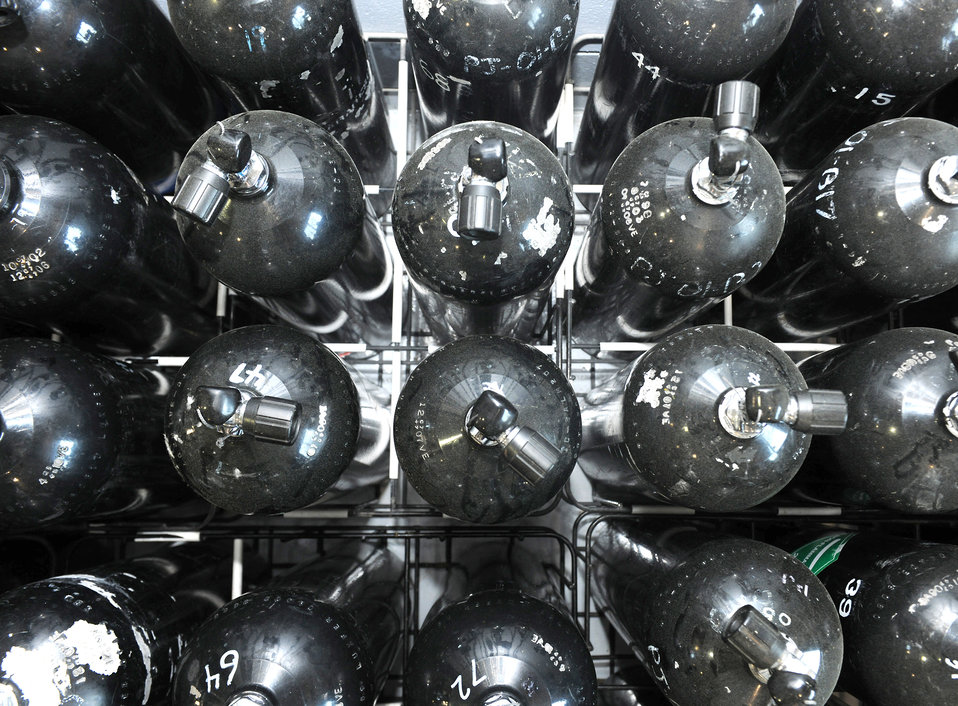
Logistic support

Scuba tanks are lined up for use at the 38th Rescue Squadron logistics flight maritime operations section May 12, 2010, at Moody Air Force Base, Ga. The scuba tanks are used for inflating portable watercraft and also for open-ocean search and rescue missions when scuba diving is necessary.